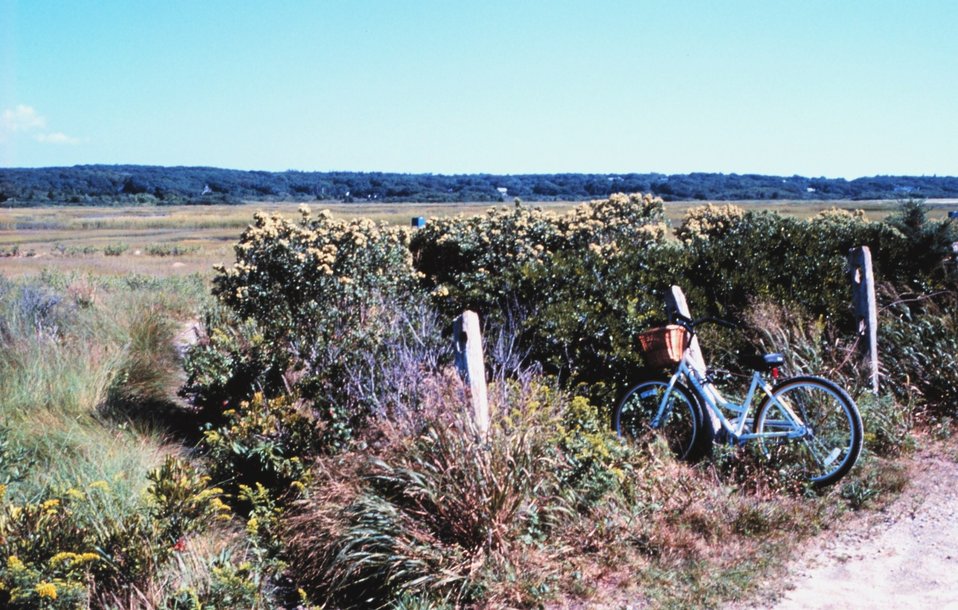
Great Sippewissett Marsh, West Falmouth